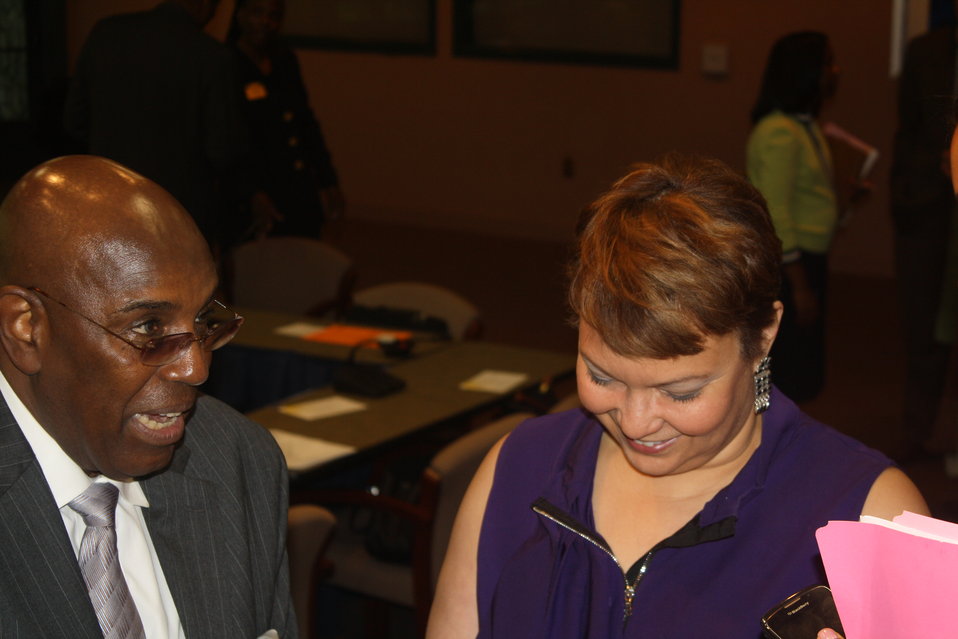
Faith-Based and Neighborhood Partnership launch at Atlanta's Carter Center